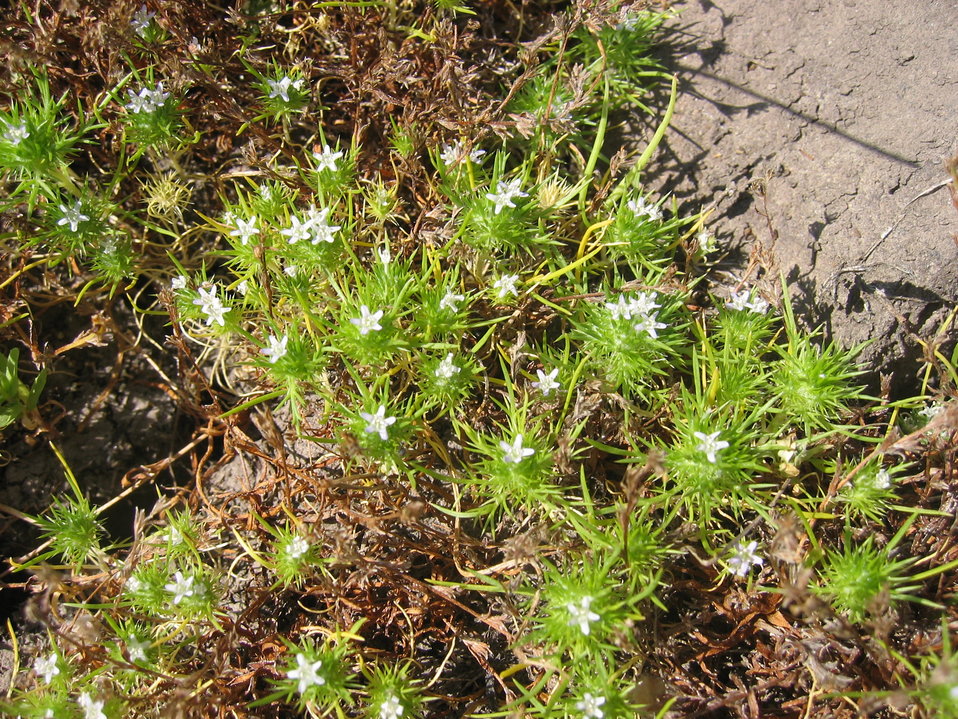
Spreading Navarretia Plant

Navarretia fossalis (spreading navarretia), a federally threatened plant, is photographed at Mesa de Burro on the Santa Rosa Plateau Ecological Reserve in Riverside County, CA. The Reserve is part of the Santa Ana Mountain Range located in southern California. This plant primarily occurs with vernal pools and in temporary wetlands. (Sally Brown/USFWS photo)